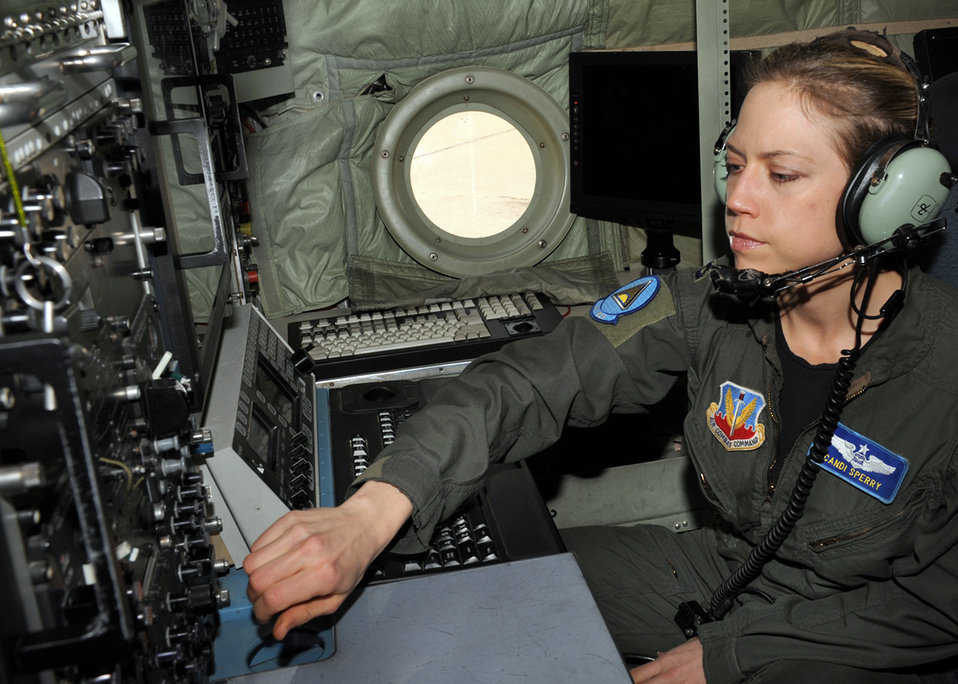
Airmen awarded 2009 Air Force Robbie Risner Award

Capt. Candice Sperry performs an equipment check on an EC-130H Compass Call aircraft Feb. 1, 2010 at Davis-Monthan Air Force Base, Ariz. Captain Sperry was recently awarded the 2009 Air Force Robbie Risner Award for being the top weapons officer in the Air Force. Captain Sperry is a weapons officer in the 41st Electronic Combat Squadron.